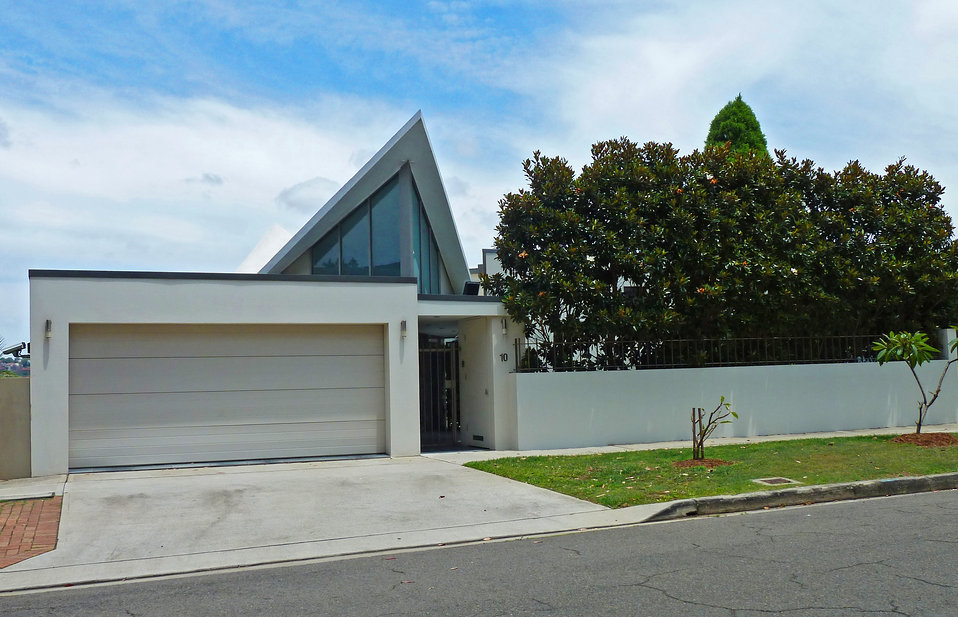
10 Tivoli Avenue, Rose Bay, New South Wales, Australia.